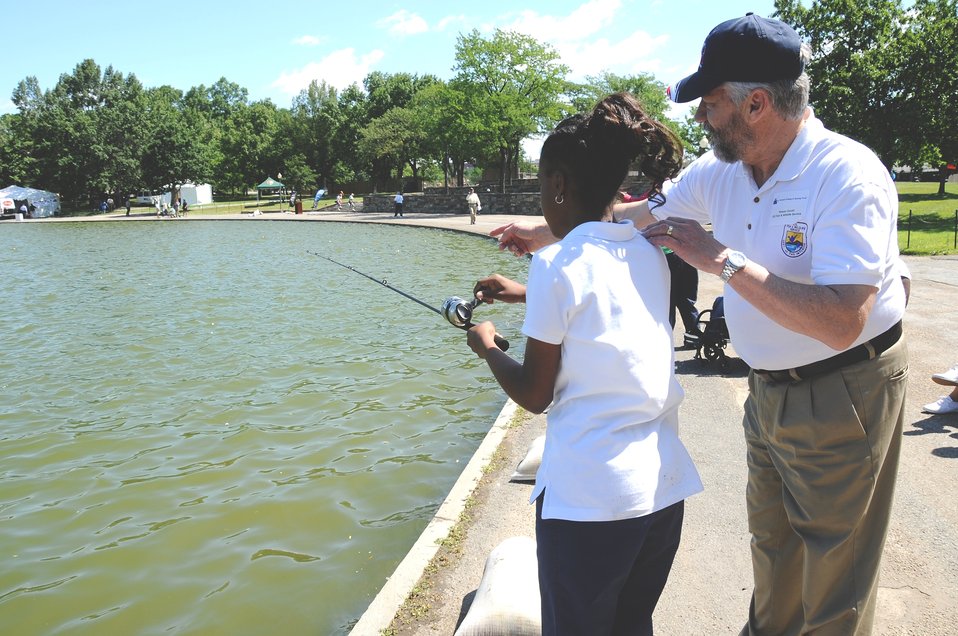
Learning to fish

Rowan Gould, Deputy Director for Operations, teaches students how to fish.